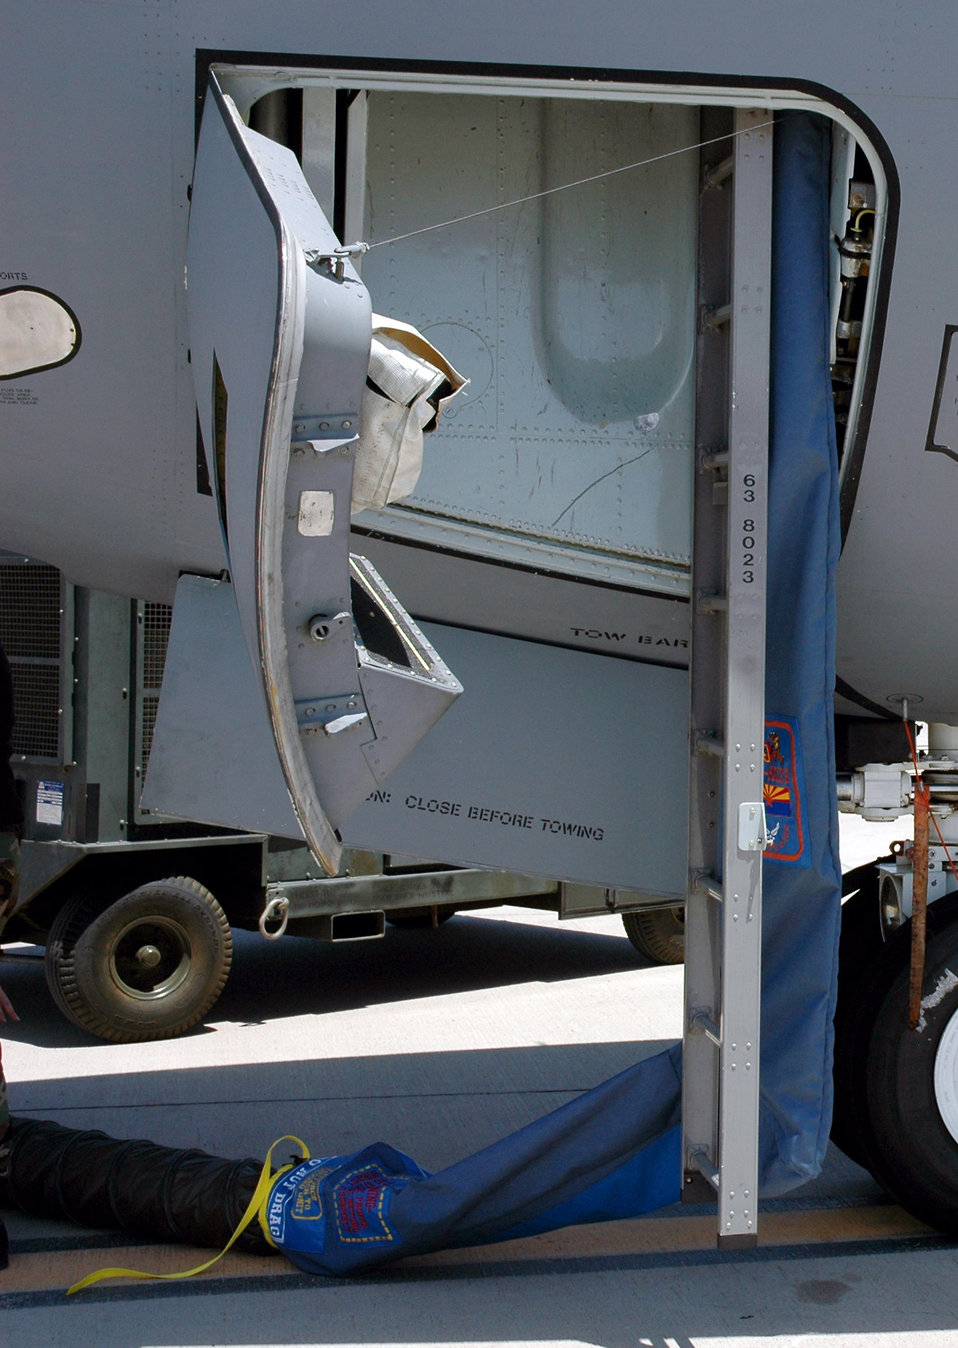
KC-135 flight deck cool-down

A fabricated cooling sock is attached behind the crew entry ladder of a KC-135 Stratotanker to allow cooling air onto the flight deck when the tanker is parked on a ramp in a very hot climate. The cooling sock demonstrated an Air Mobility Battlelab KC-135 Hot Weather Cooling Sock initiative. The use of the cooling sock has been recommended for fielding to Air Mobility Command officials by the battlelab staff, which is located at the U.S. Air Force Expeditionary Center on Fort Dix, N.J.